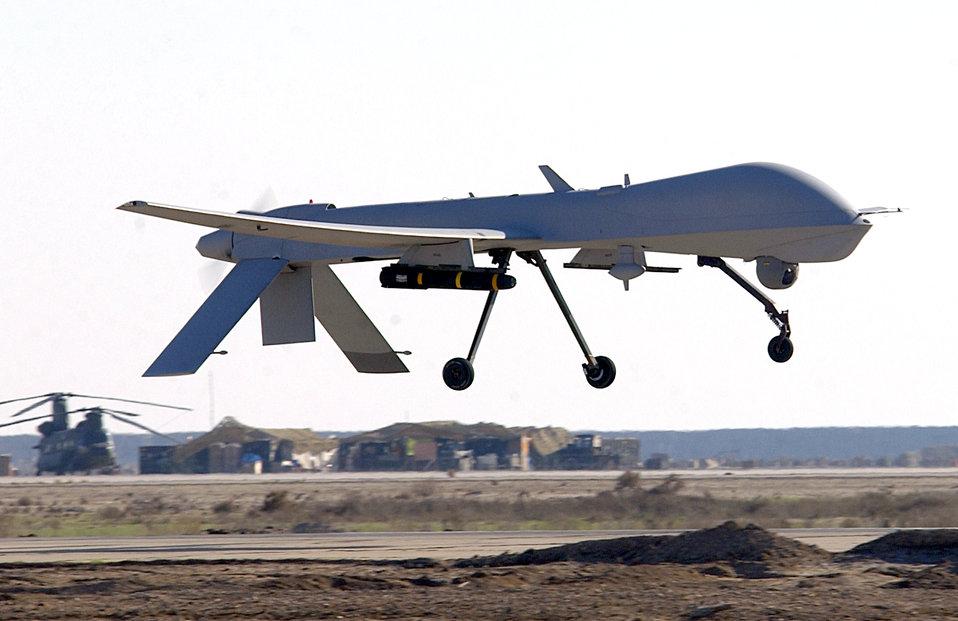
CENTAF Airpower Summary for April 9, 2007

An MQ-1 Predator unmanned aerial vehicle, like the one shown here, support coalition ground forces with firepower, overwatch and reconnaissance.